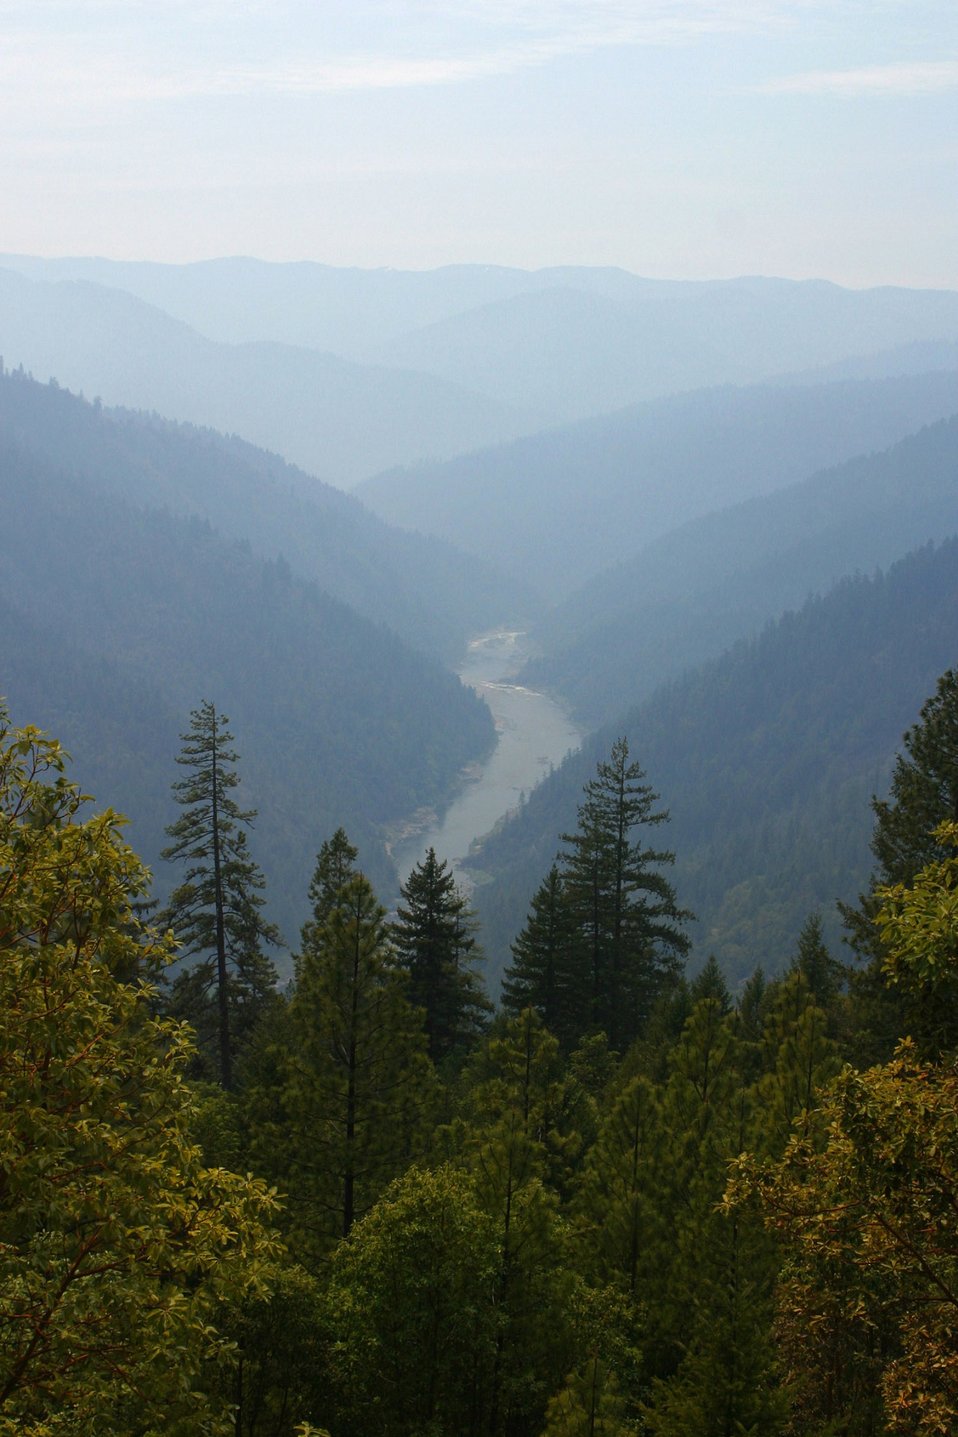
Wild section of the Rogue River from Grave Creek to Foster Bar May 19 to May 22.